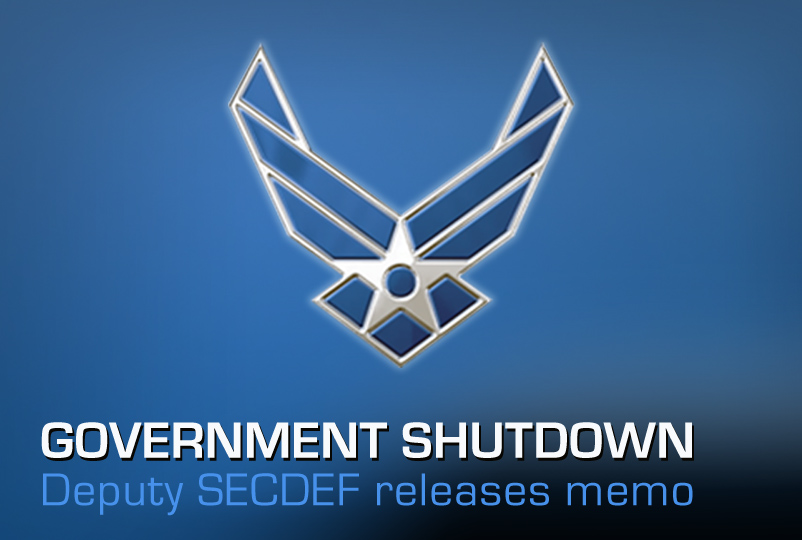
Government Shutdown